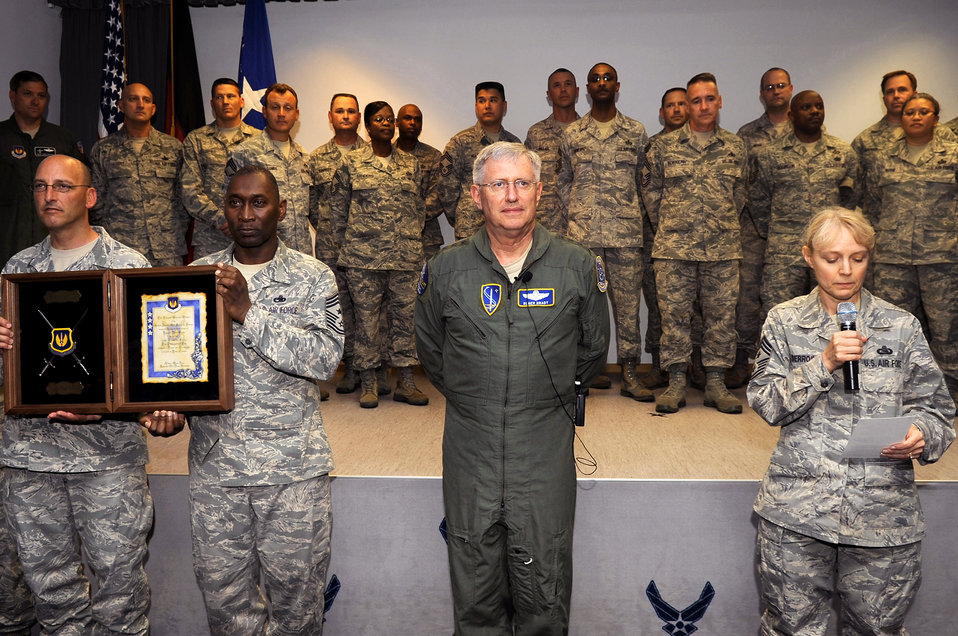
USAFE enlisted honor general with Order of the Sword

Gen. Roger A. Brady listens to Chief Master Sgt. Pamela Derrow as she reads the Order of the Sword invitation July 14, 2010 at the Kisling NCO Academy on Kapaun Air Station, Germany. General Brady will formally accept the honor during a ceremony in the fall at Ramstein Air Base, Germany. General Brady is the U.S. Air Forces in Europe commander and Chief Derrow is the USAFE command chief master sergeant.